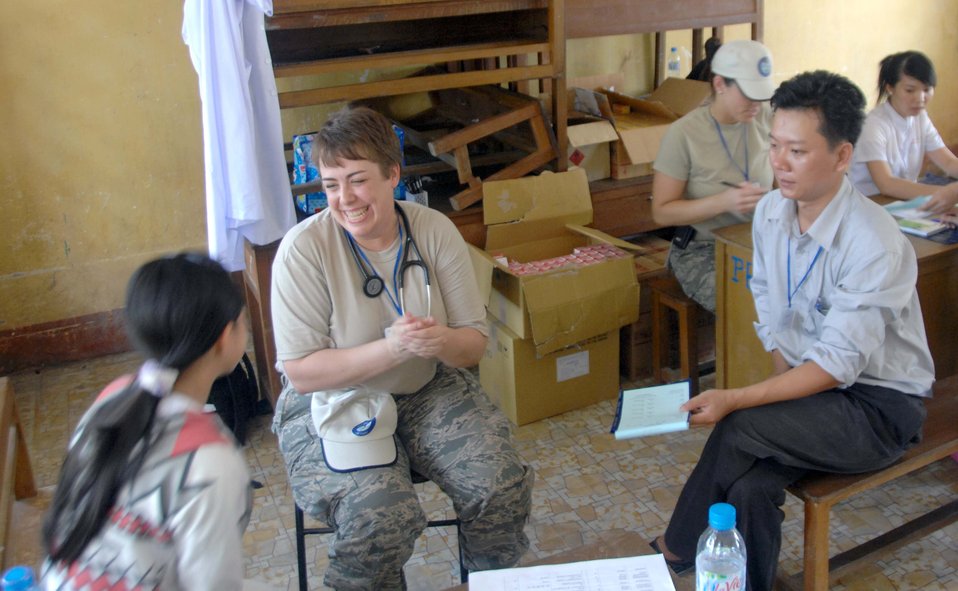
U.S., Vietnam building great relationships says U.S. Consul General

Lt. Col. Laura Peterson and Vietnamese Dr. Tri Duc Nguyen visit with a patient May 10, 2010, in the temporary medical clinic at Tan Thoi, Vietnam, as part of Pacific Angel 10-2. Colonel Peterson is from the Air Force Reserve Command's 477th Aerospace Medicine Flight at Elmendorf Air Force Base, Alaska.